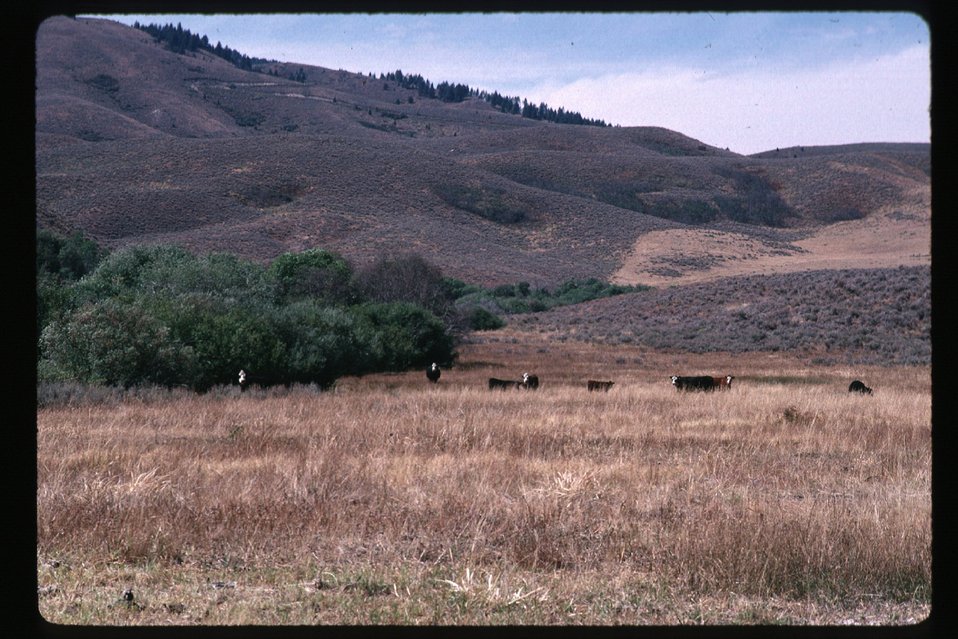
Grazing cows Rangeland Four Rivers Field Office LSRD Lower Snake River District